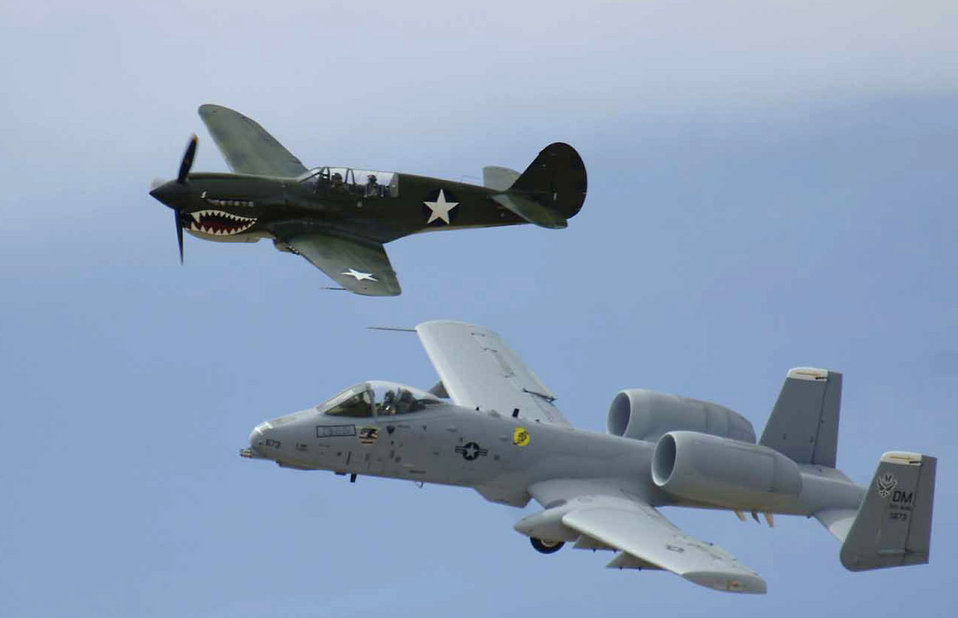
Heritage flight

A P-40 Warhawk and an A-10 Thunderbolt II fly in formation Friday, March 3, 2006, during the 2006 Heritage Conference at Davis-Monthan Air Force Base, Ariz. The conference involves today's state-of-the-art fighters flying in close formation with World War II and Korean War vintage fighters. The flight is designed to safely display the evolution of U.S. Air Force airpower and support Air Force's recruiting and retention efforts.